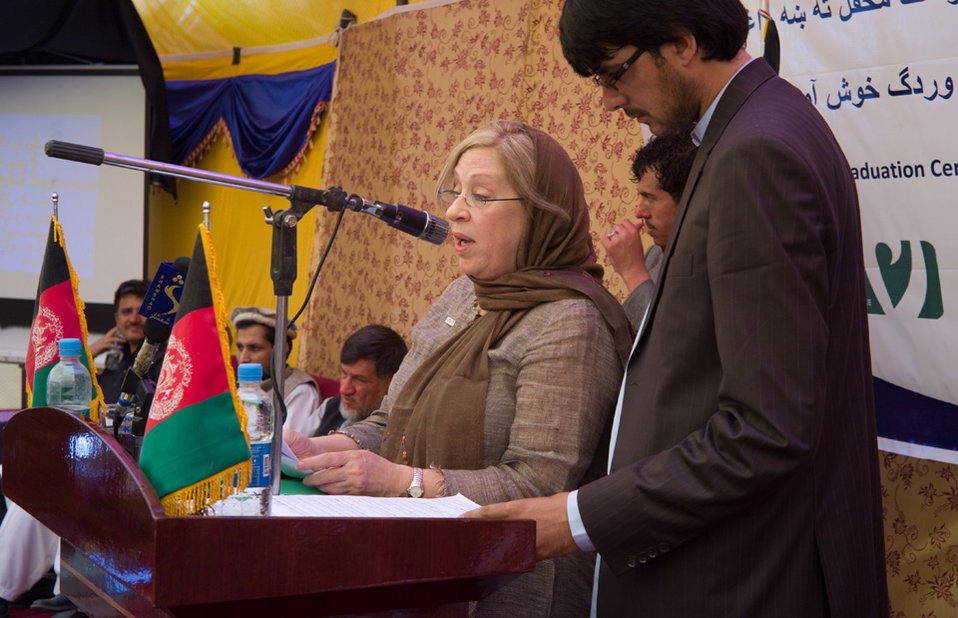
Carol speaking